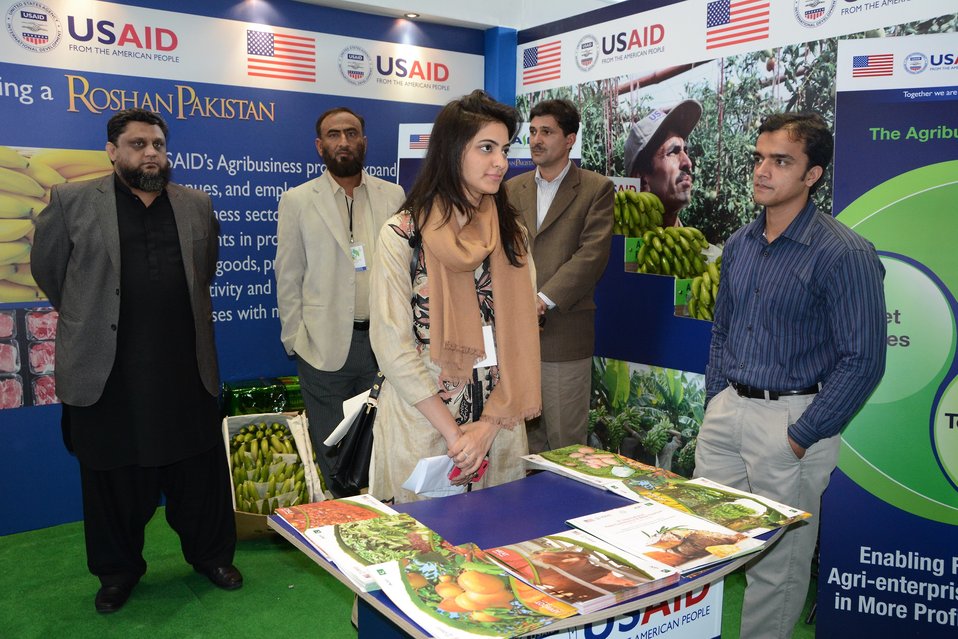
TAP6